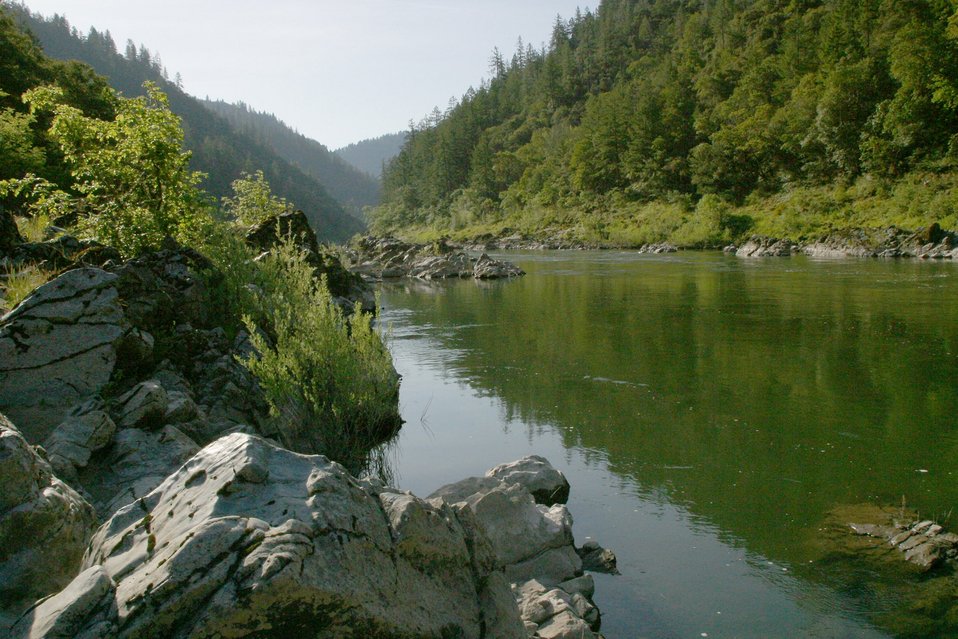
Wild section of the Rogue River from Grave Creek to Foster Bar May 19 to May 22.